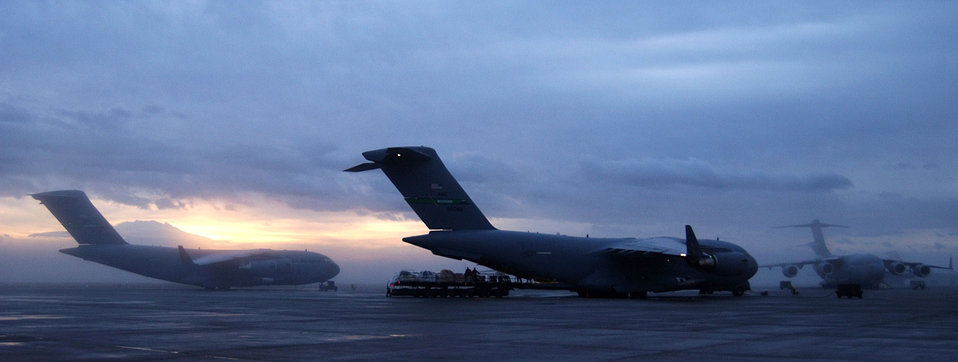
In the dawns early light

MCCHORD AIR FORCE BASE, Wash. -- A C-17 Globemaster III sits on the flightline here recently and waits to begin its day of combat airlift as dawn breaks over Mt. Rainier.